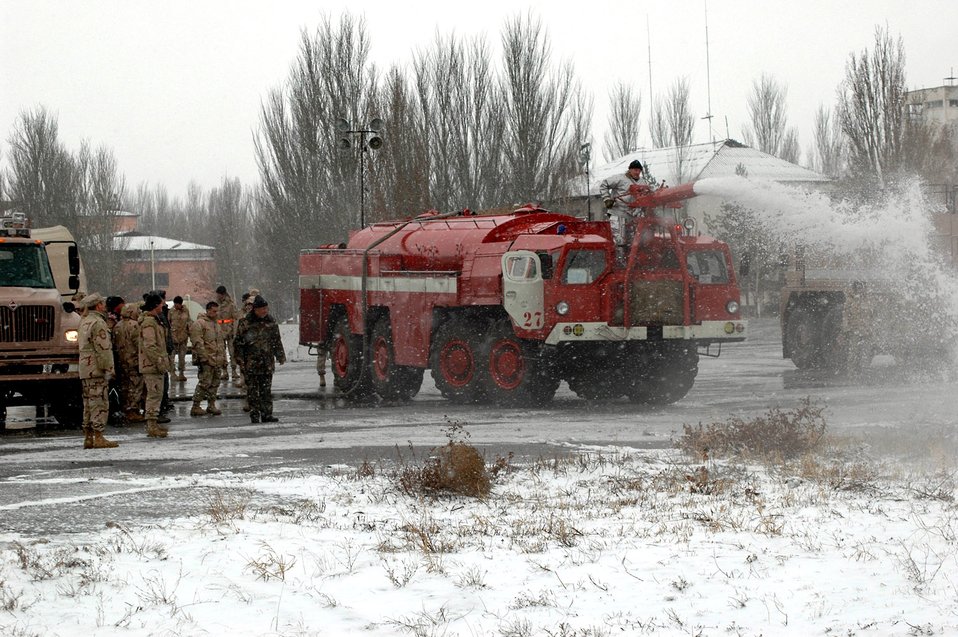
Manas Airmen train with Kyrgyz firefighters

Manas International Airport firefighter Stas Suleymanov demonstrates to Airmen the use of the Kyrgyz firetruck water canon using water pumped from a 376th Air Expeditionary Wing fire truck Feb. 25 at the airport in Kyrgyzstan. The 376th AEW fire department routinely trains with their MIA and other Kyrgyz counterparts.